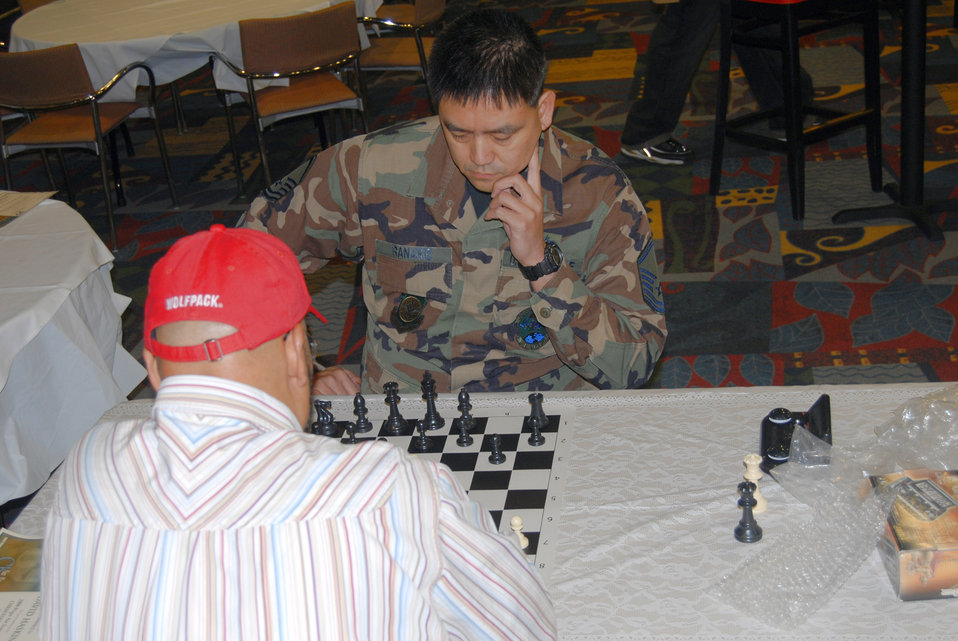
3 Airmen take spots on all-service chess team

Master Sgt. Dan Ranario contemplates his next move during a chess tournament in the community activities center at Pope Air Force Base, N.C. Sergeant Ranario will compete as a member of the U.S. chess team in the 19th North Atlantic Treaty Organization Chess Championship Aug. 4 through 8 in Brussels, Belgium. Sergeant Ranario is assigned to the 3rd Aerial Port Squadron.